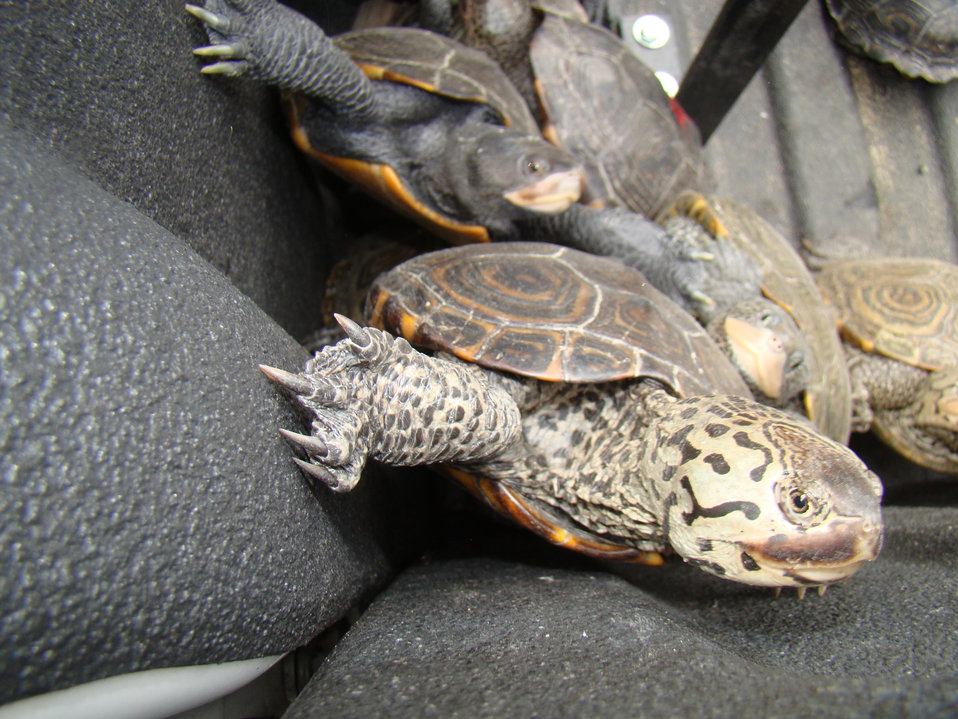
An adult Diamondback terrapin is too close to the runway at John F. Kennedy (JFK) International Airport, New York on May 23, 2012. Jenny and the U.S. Department of Agriculture (USDA) Animal and Plant Health Inspection Service (APHIS) Wildlife Services staff at JFK scare away wildlife with a number of technical solutions like pyrotechnics and noise making devices that help to prevent airline strikes with wildlife. Wildlife biologists at JFK work to redirect the terrapins out of harm’s way and more directly to areas that are suitable for nesting.